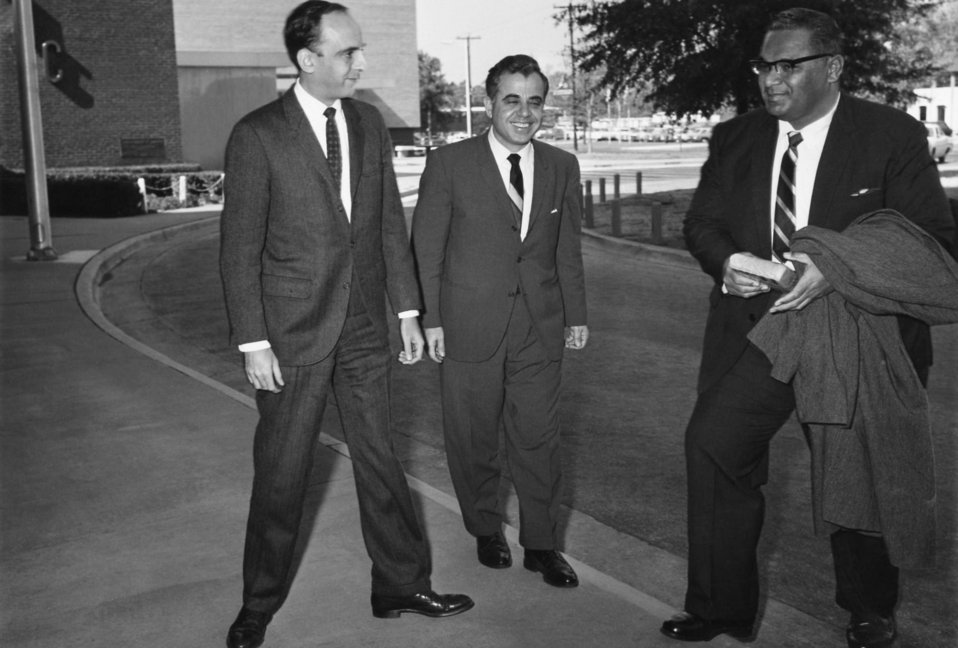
Shown here welcoming Prince Tu'ipelehake of Tonga (right) to the Centers for Disease Control, was former CDC Director, Dr. David J. Sencer (left), and Dr. Abdallah E. Najjar (middle), of the Office of International Services.